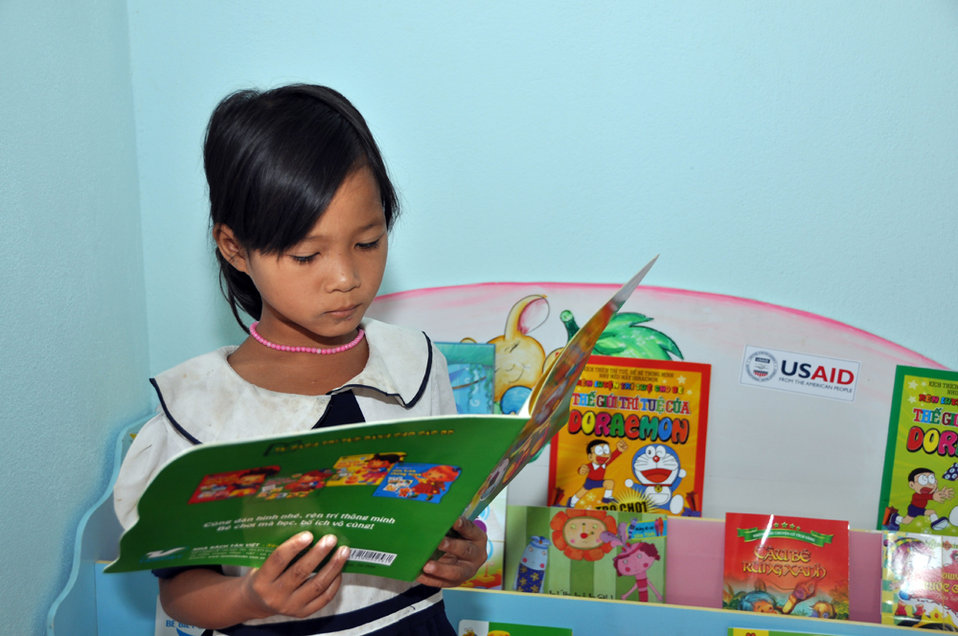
USAID contributes to refurbished pre-schools and teacher training in Vietnam